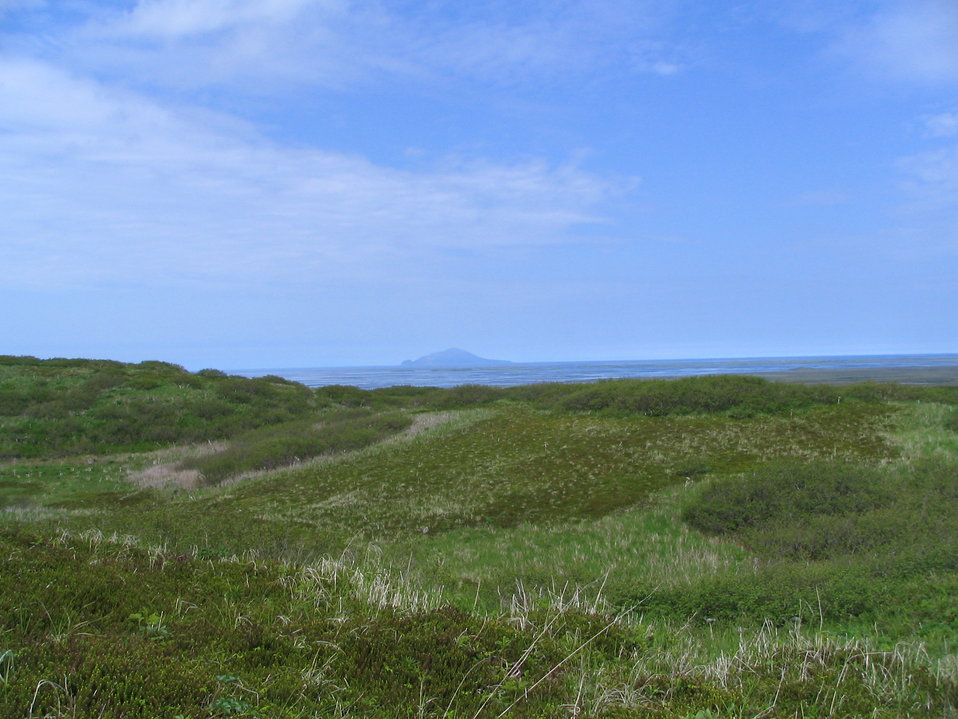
Izembek Landscape

In wilderness near Frosty Peak, Amak Island in background, Izembek National Wildlife Refuge